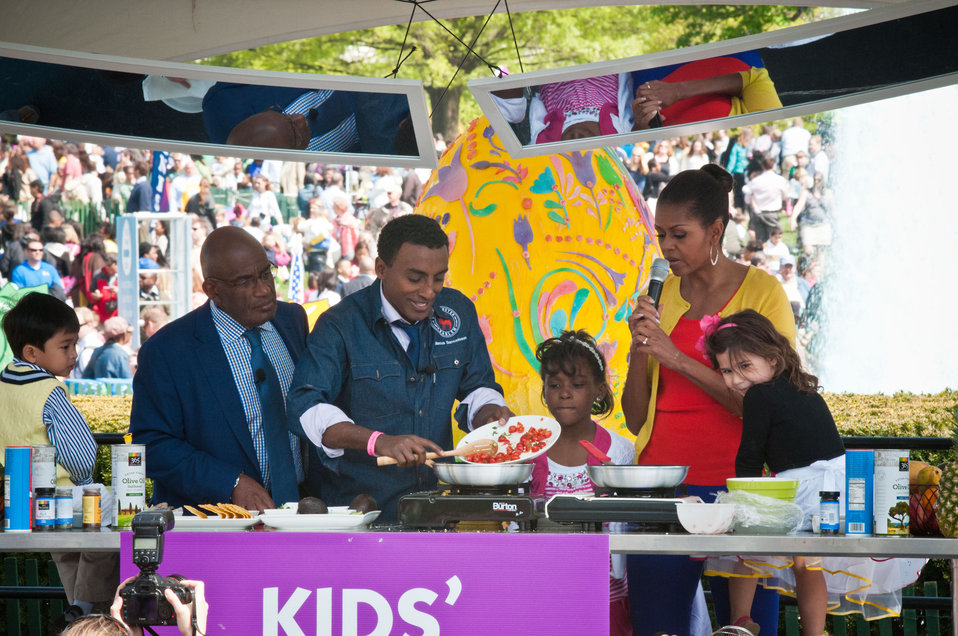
Weather and feature anchor NBC TODAY Show Al Roker (left), Chef Marcus Samuelsson (center) and First Lady Michelle Obama (right), prepare Shrimp Salad and Vegetable Tacos at the “Kids’ Kitchen” activity center led by the White House chefs and celebrity guest chefs at the White House Easter Egg Roll Monday, April 9, 2012 in Washington, D.C. This years Easter Egg Roll is the 134th year of the largest annual public event at the White House. This year’s theme is “Let’s Go, Let’s Play, Let’s Move!” The theme is the emphasis of First Lady Michelle Obama’s Let’s Move! initiative promoting health and wellness and encouraging children to lead healthy and active lives to solve the problem of childhood obesity. The activity center was built around the White House Kitchen Garden.